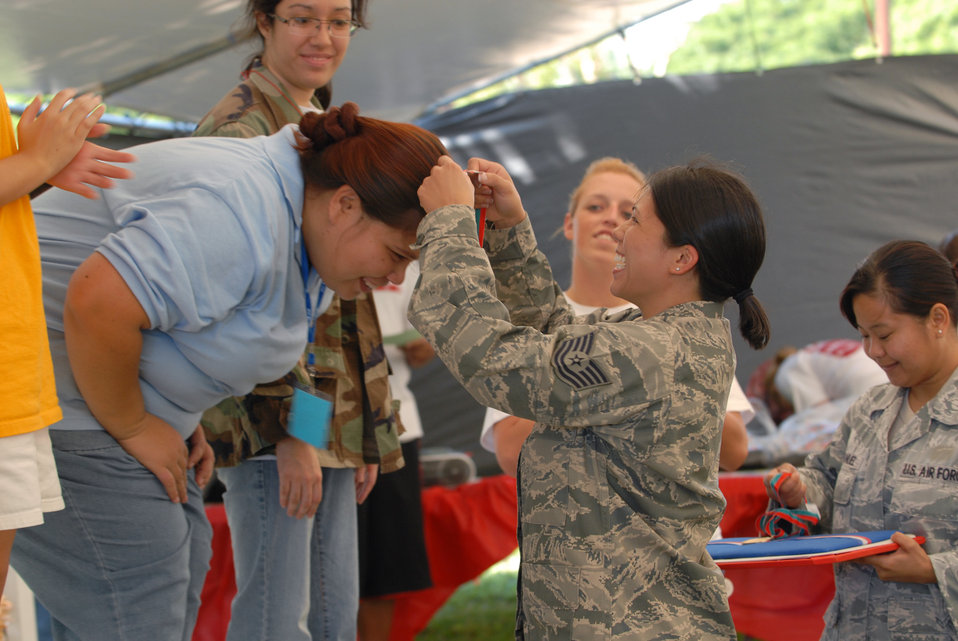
Special Olympics

Tech. Sgt. Calantha Pickel awards a medal to a participant of Special Olympics Dec. 4, 2010, at Joint Base Pearl Harbor-Hickam, Hawaii. Sergeant Pickel is a Pacific Command Joint Intelligence Operations Center intelligence analyst.